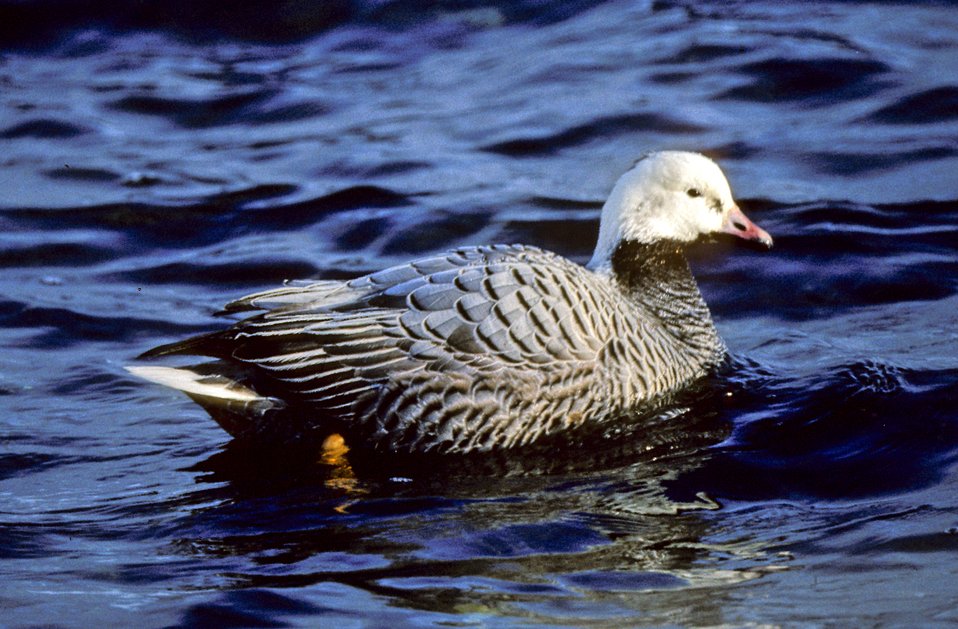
Emperor Goose on Water.